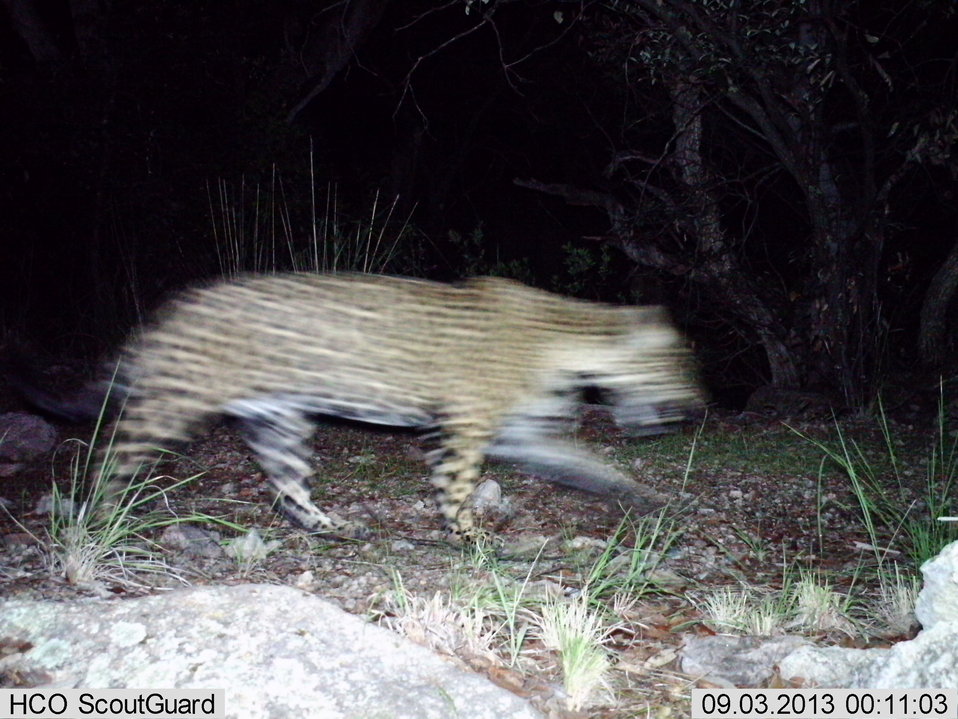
Male jaguar photographed by automatic wildlife cameras in the Santa Rita Mountains on September 24, 2013, as part of a U.S. Fish and Wildlife Service/Department of Homeland Security-funded jaguar survey conducted by University of Arizona. This photo is blurry. The jaguar has been photographed previously at this location.